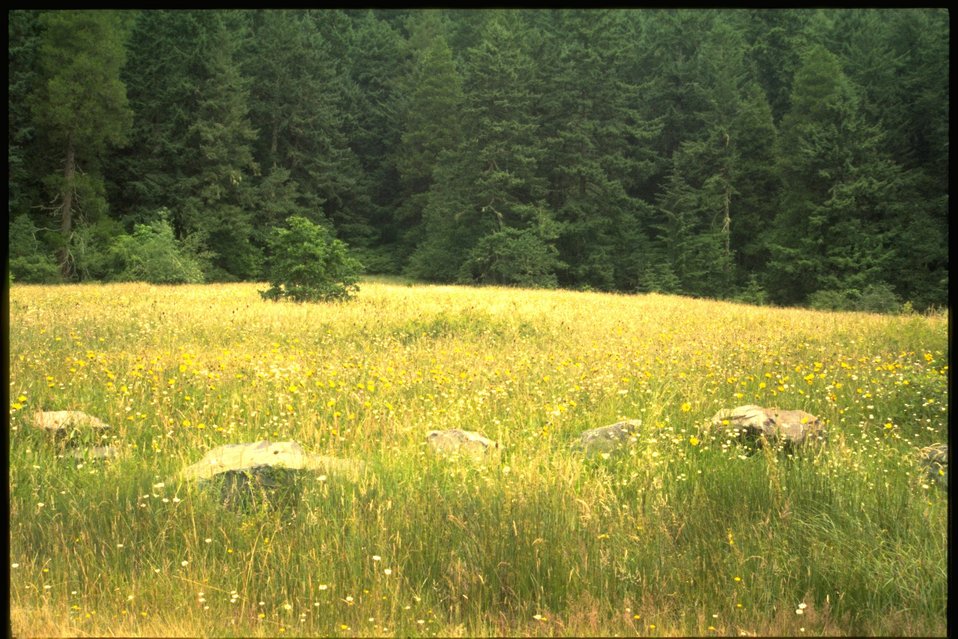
Scenic view of McGowan Meadow.